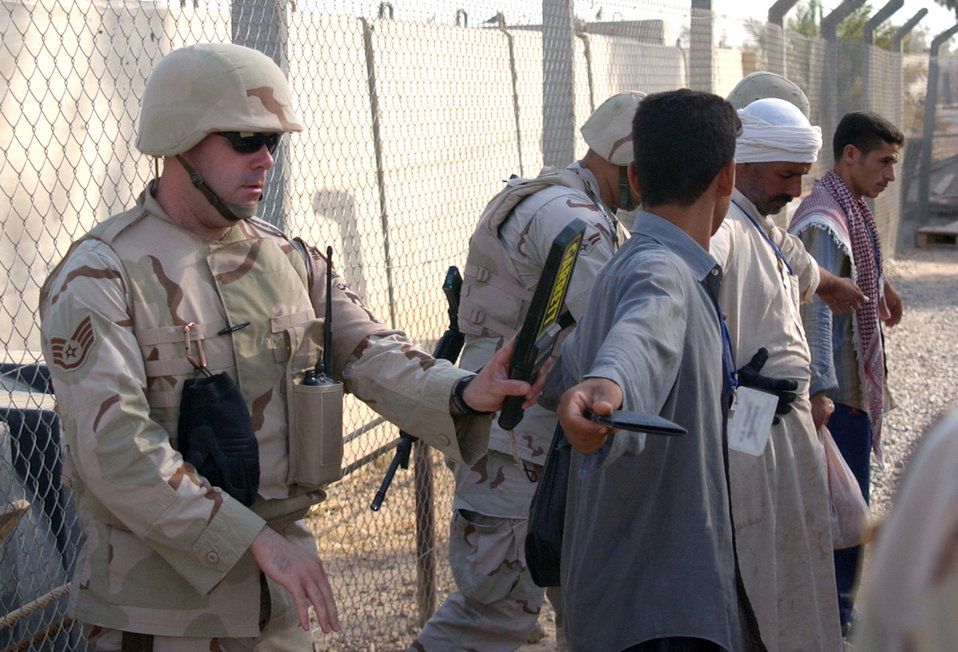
Detector sweep

Staff Sgt. Michael Davis sweeps Iraqi workers with a metal detector near Balad Air Base, Iraq, Aug. 28.